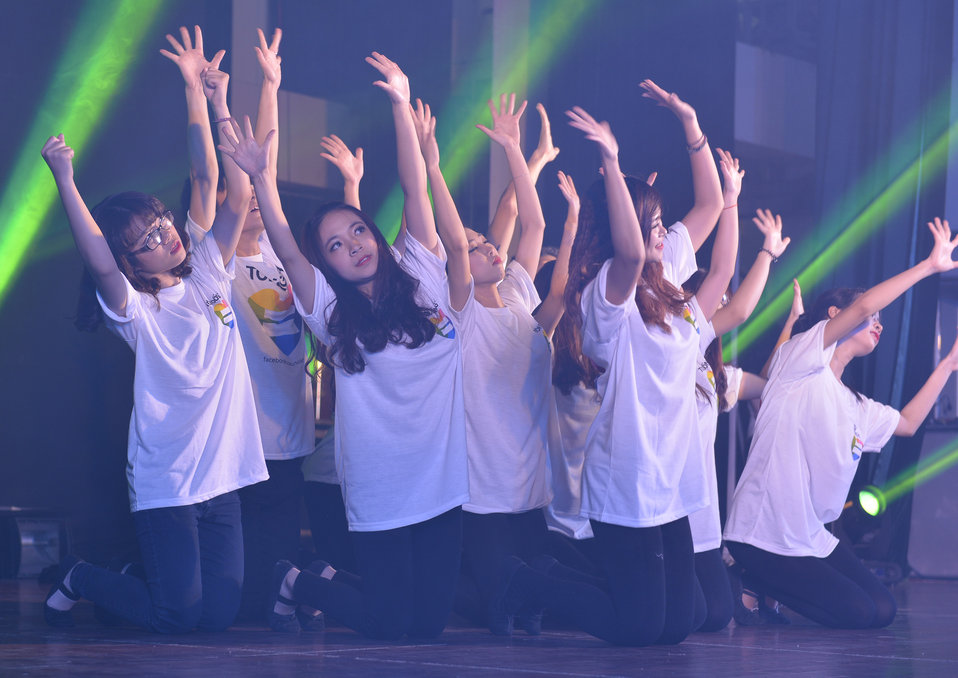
Performance at iSee LGBT Event

USAID Vietnam